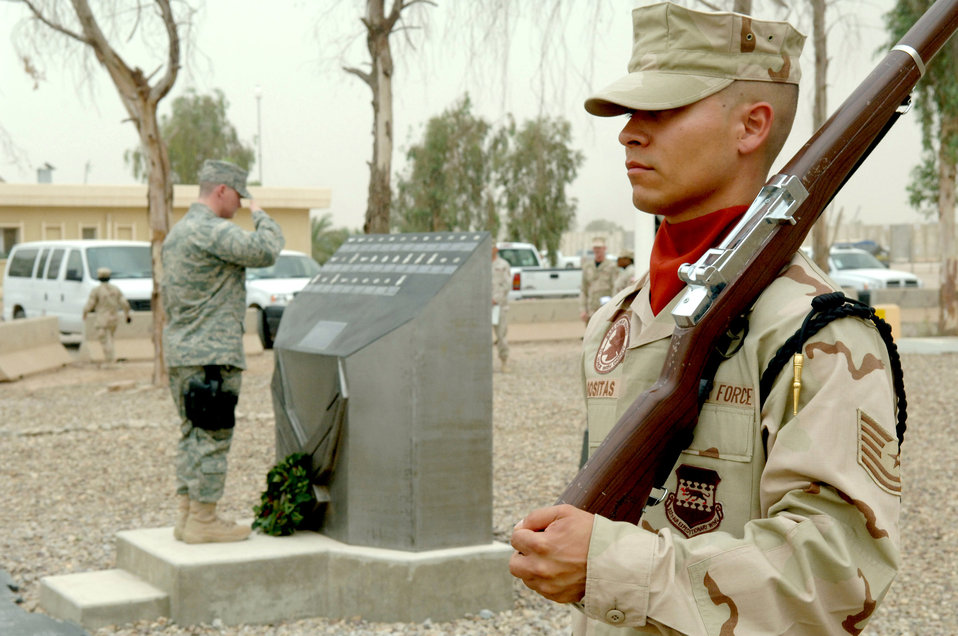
Balad Airmen honor fallen on Memorial Day

Honor guard member Tech. Sgt. Richard Rositas watches over the Fallen Airman Memorial at Balad Air Base, Iraq, May 28 as an Airman in the background pays tribute to the fallen. More than 300 Airmen gathered to pay tribute to servicemembers who made the ultimate sacrifice defending freedom.